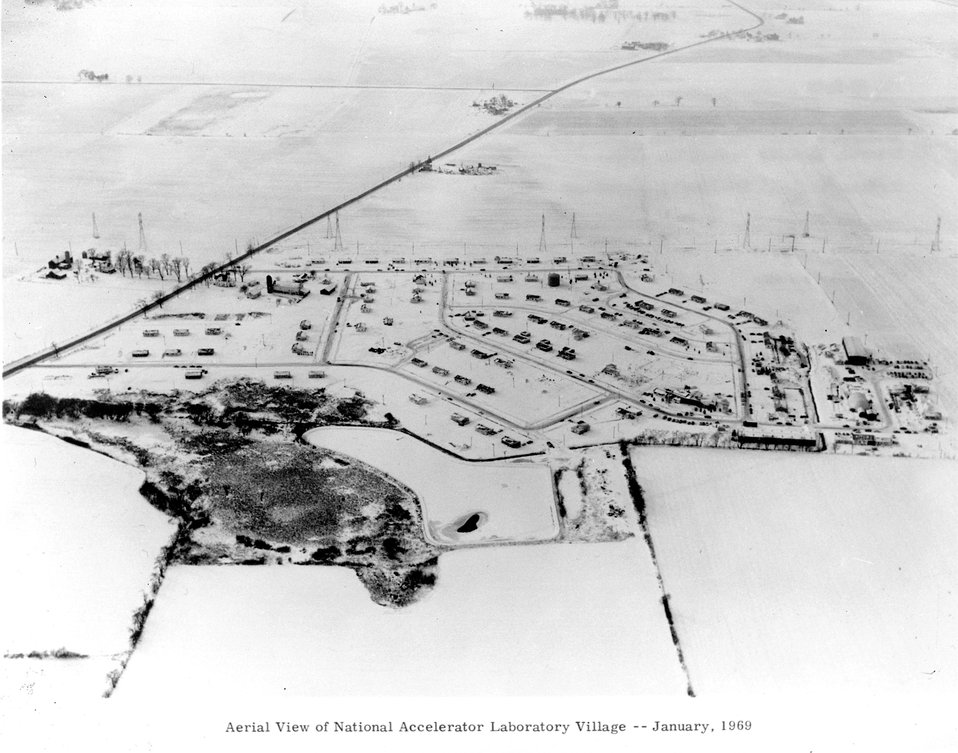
Aerial view of the NAL Village, Batvia, Il.
c.1969